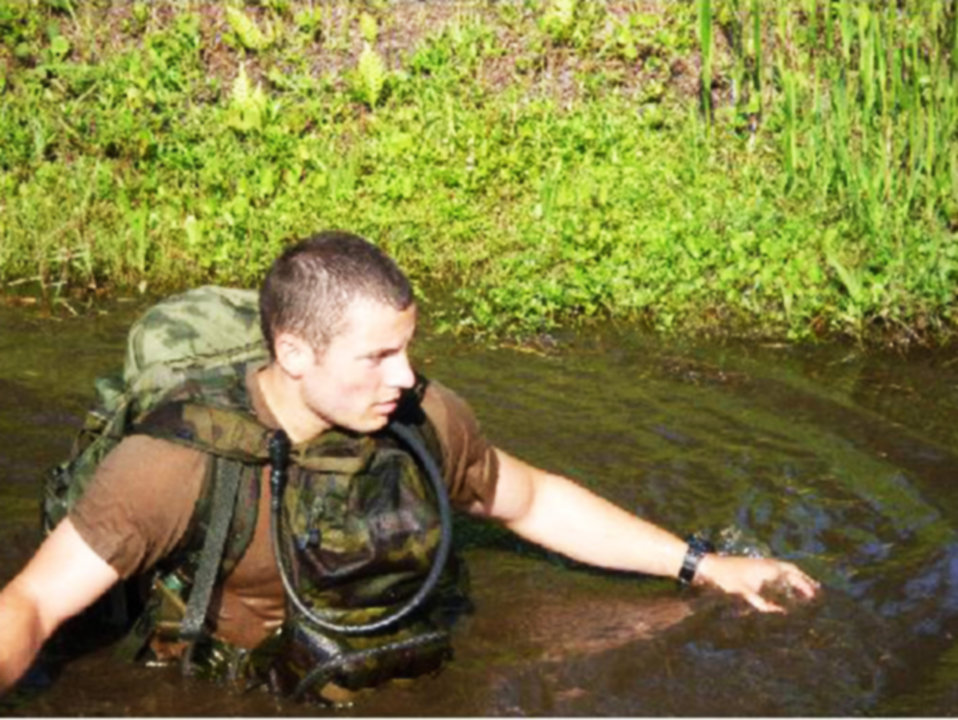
Special operations unit opens professional developement course for ROTC cadets

Norwich University ROTC Cadet Ian Kemp walks through the marsh as part of the special operations orientation professional development training Sept. 23, 2009, at Hurlburt Field, Fla. Cadet Kemp is assigned to Air Force ROTC Det. 867.